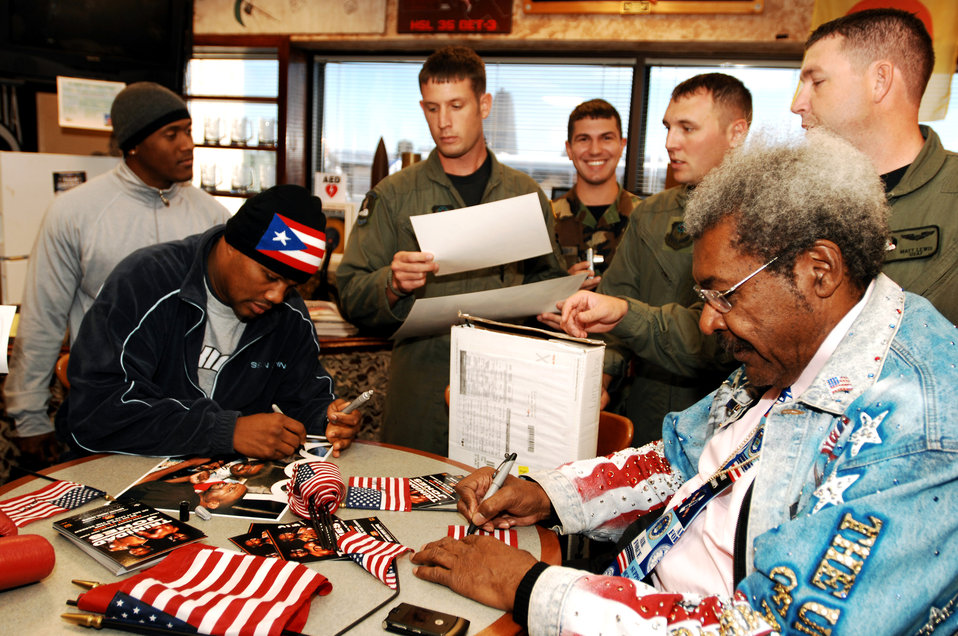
Boxing trio visits Hurlburt Field Airmen

Professional boxer Felix Trinidad (left) and promoter Don King (right) sign autographs and take pictures with Airmen from the 4th Special Operations Squadron Dec. 5 at Hurlburt Field, Fla. Mr. Trinidad, Mr. King and boxer Roy Jones Jr., visited Hurlburt Field as part of their tour of military installations to show support for military members.